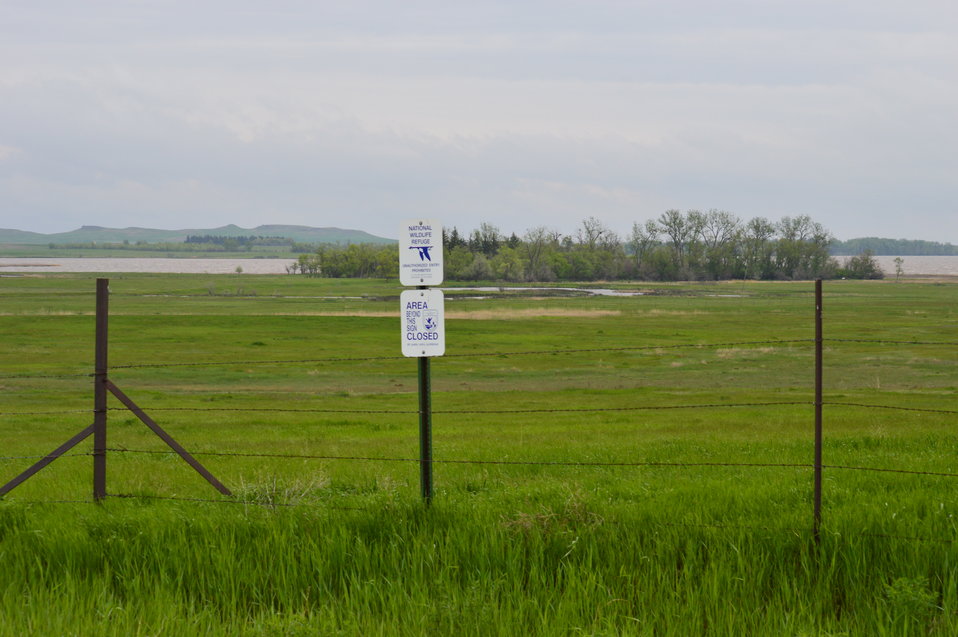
Lake Ilo

Scenery and wildlife at Lake Ilo National Wildlife Refuge in North Dakota